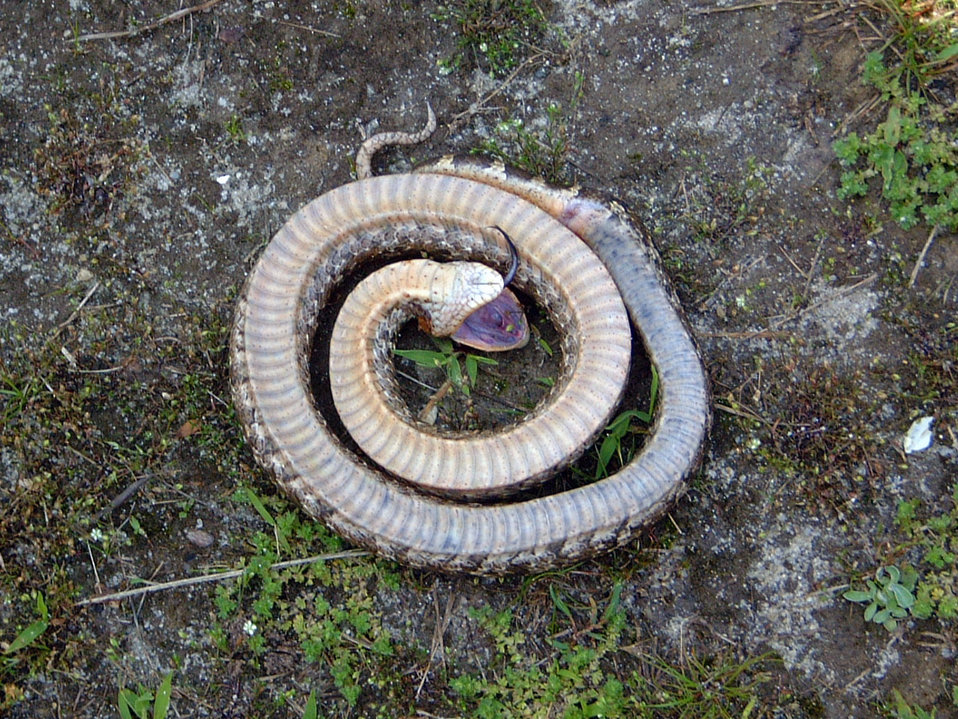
Hognose snake playing dead at Prime Hook National Wildlife Refuge.